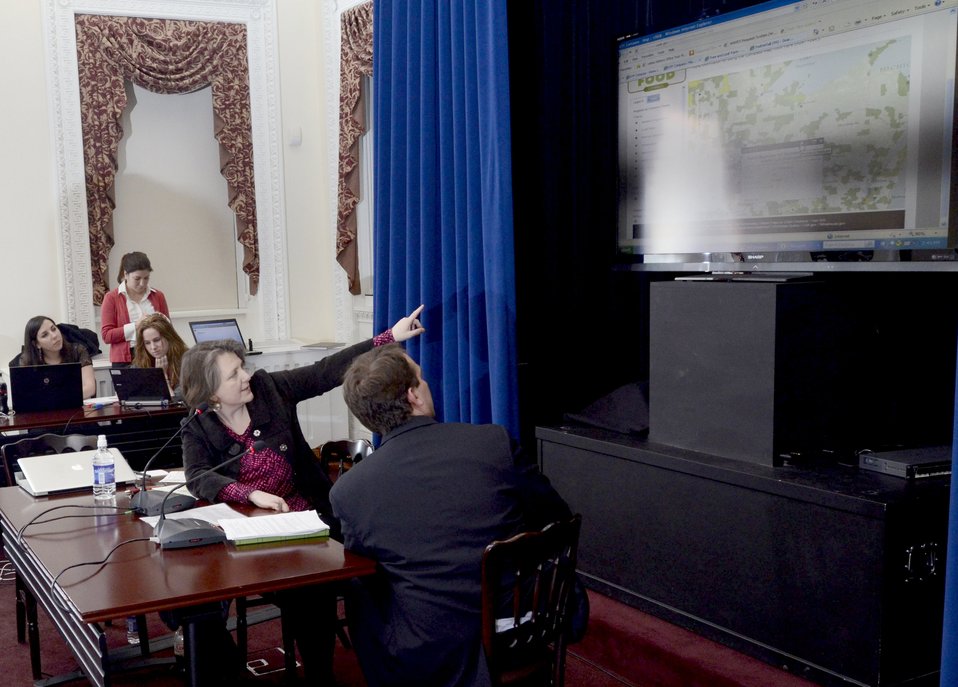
Agriculture Deputy Secretary Kathleen Merrigan and Director, White House Office of Public Engagement Jon Carson hold a virtual conversation continuing the National Conversation on Local and Regional Food projects and how they offer economic opportunities to local farmers, ranchers and food entrepreneurs. The virtual conversation took place from the White House, in Washington, D.C., on Monday, March 5, 2012.